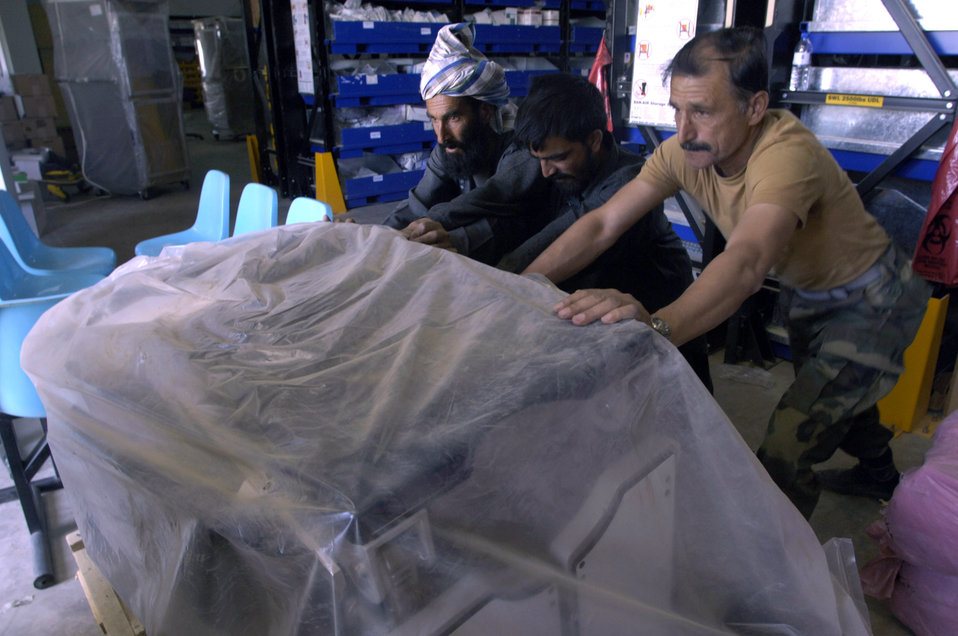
Airmen mentorship helps develop Afghan hospital

Afghan national army Maj. Abdul Ghafar (right) and his Afghan helpers move a load of medical equipment out of his warehouse for installation in a new $6.5 million, 50-bed ANA hospital Aug. 17 in Afghanistan. The state-of-the-art facility is located on the ANA's Hero Camp, just outside of Kandahar Airfield in southern Afghanistan. Major Ghafar is the ANA's 205th Hero Corps warehouse commander. He is also in charge of all logistical support for the 205th.